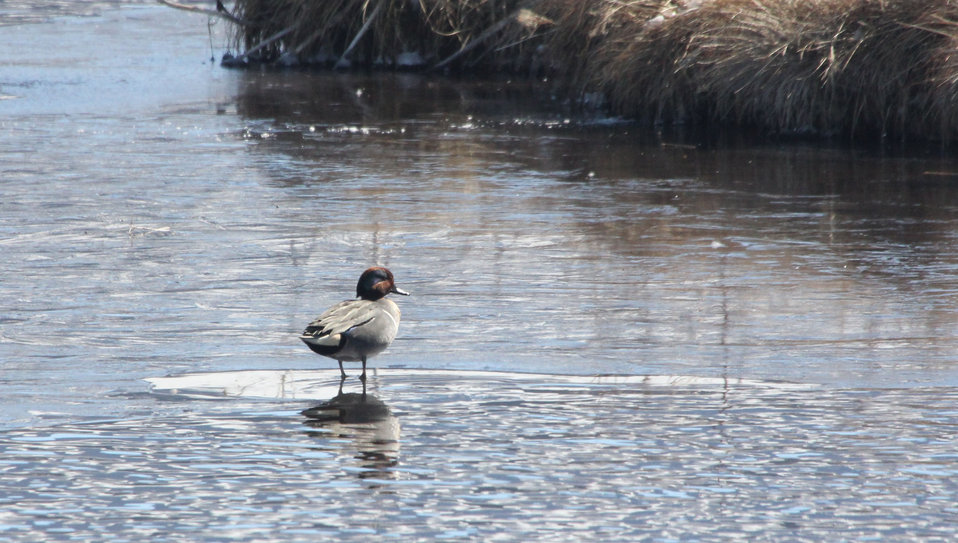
A Lone Duck

Visitors are treated to a rich variety of waterfowl near the visitor center. Here, a Green Winged Teal stands on the spring ice on Flat Creek.

Credit: USFWS / Ann Hough, National Elk Refuge volunteer